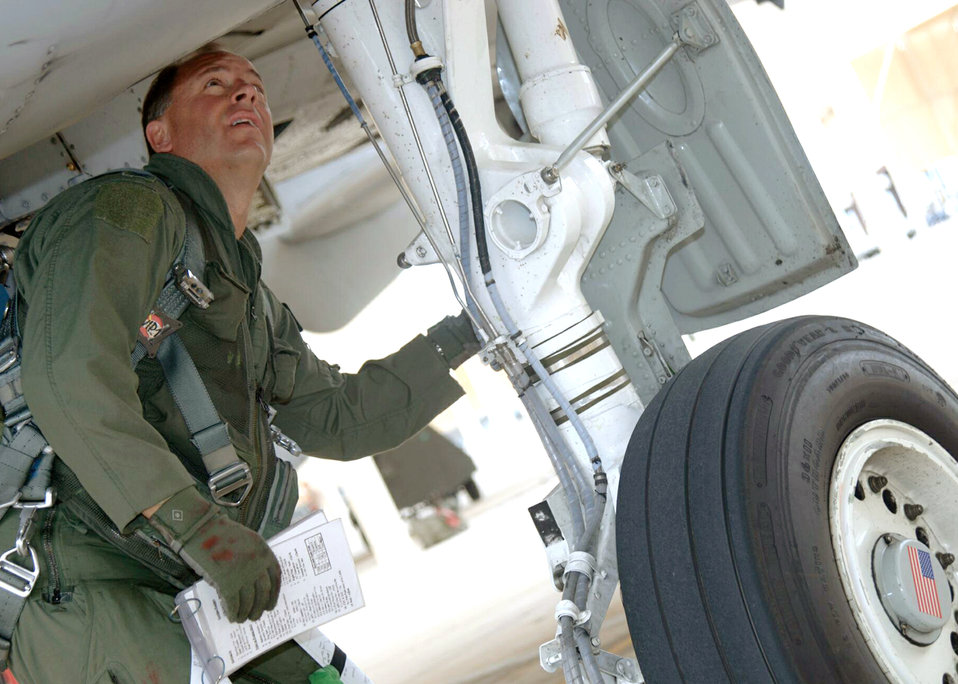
Cleared for takeoff

DAVIS-MONTHAN AIR FORCE BASE, Ariz. -- Col. Michael Spencer conducts a preflight inspection on an A-10 Thunderbolt before takeoff. He is the 355th Wing commander.